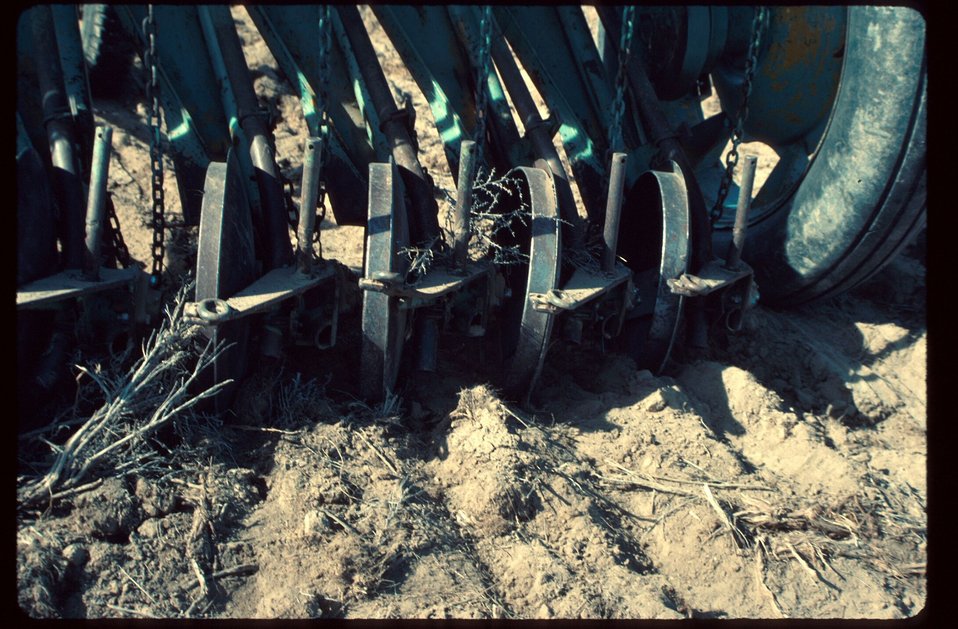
Range Restoration Project